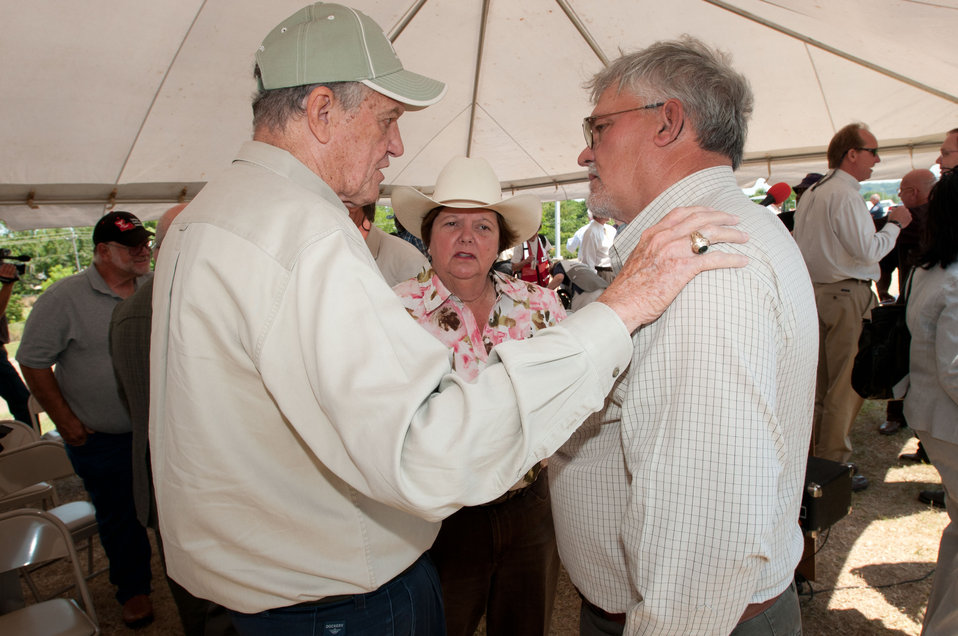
U.S. Department of Agriculture Louisiana State Executive Director Willie F. Cooper had several one-on-one conversations with a farmers following an outreach event held on the Mississippi River levee at Vidalia, LA, on Thursday, May 19, 2011.